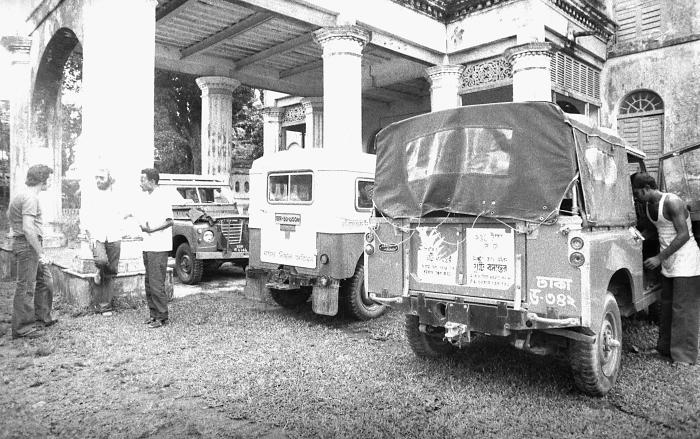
This 1975 image depicted the outside of what was one of the smallpox field headquarters. As the eradication efforts evolved, and included more, and more involvement on the part of both public health officials, and the local populous, operations were decentralized, and divided up amongst the Districts' responsibilities. In heavily populated smallpox affected areas, operational responsibilities were further divided, and were organized at the thana, i.e., county, levels. In this image, a young American volunteer, Marty Lutz, was seen leaning against a pillar outside the headquarters, and two Mahendra Jeeps were parked outside as well.